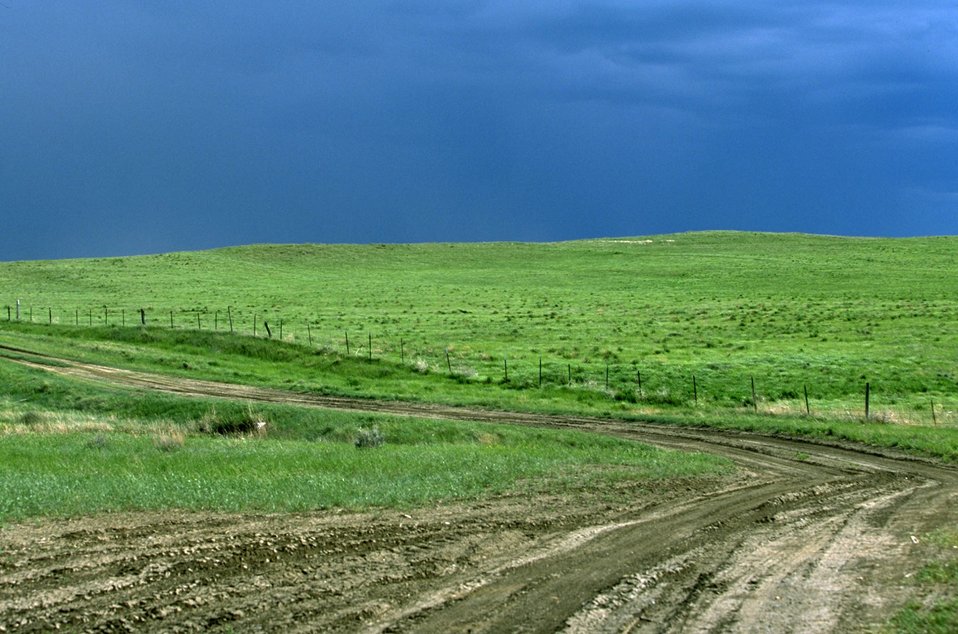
Muddy two-track road through the grassy prairie